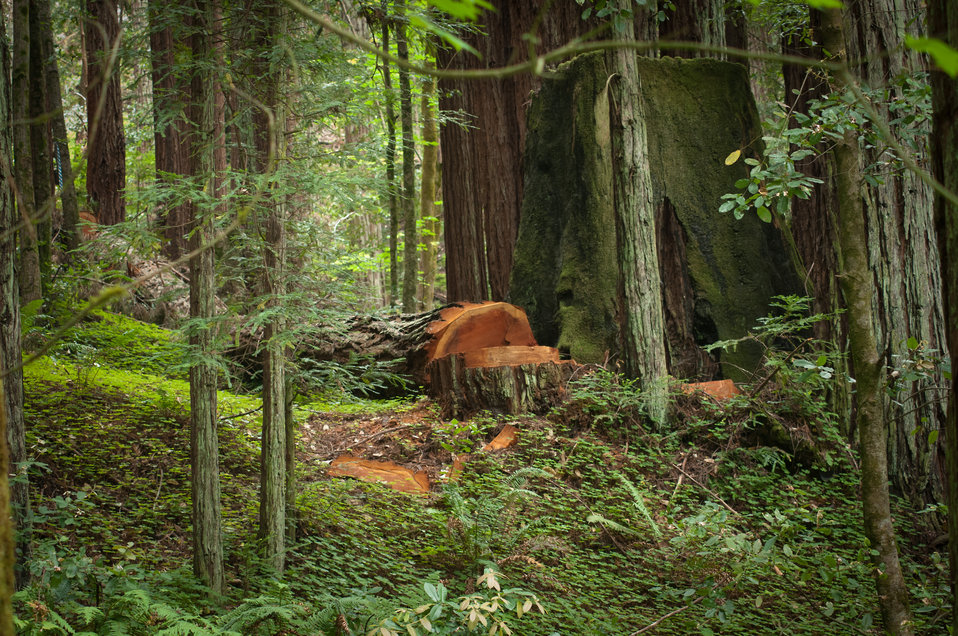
Good gardeners know that to manage a garden, plants must sometimes be thinned or removed for the health of the garden. In this case a landowner has determined these redwoods needed to be cut down to provide better health for the smaller trees and plants in this area of a private forest in Santa Cruz County, CA, on Friday, June 17, 2011. This type of growth can provide increased silt and sediment retention during heavy rains that can flow into the Monterey Bay. These Redwood trees have grown in a cathedral ring, a group of redwoods that grow in a circle around a host stump (covered with green moss), from which they sprouted. The host tree, met its demise hundreds of years ago. Assisting landowners when they want support in the management of their private forest is a factor in the America’s Great Outdoors Initiative (AGO).